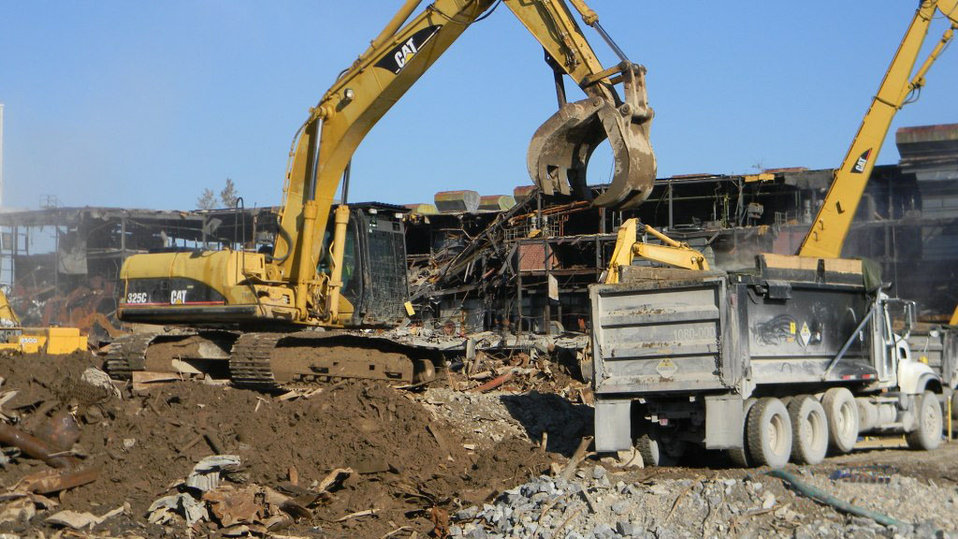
Oak Ridge’s New EM Contractor Completes 2,000 Shipments of K-25 Debris

A truck at the K-25’s east wing is loaded with debris for shipment to the Environmental Management Waste Management Facility. UCOR has completed 2,000 waste shipments since UCOR beginning work on August 1, 2011.